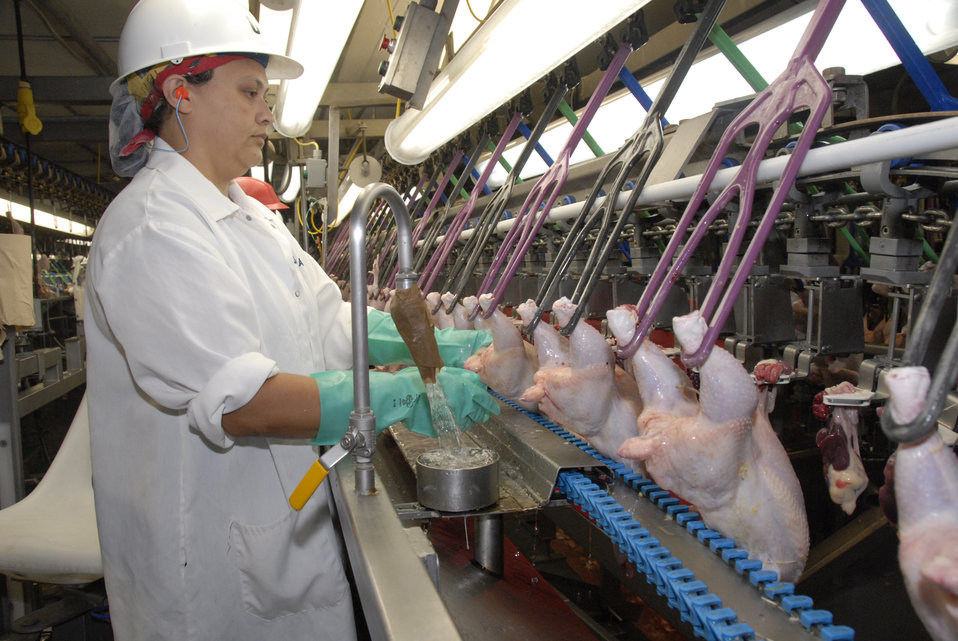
U.S. Department of Agriculture (USDA) Food Safety and Inspection Service (FSIS) inspectors examine chickens at the Holmes poultry slaughterhouse in Nixon, Texas on June 10, 2008.